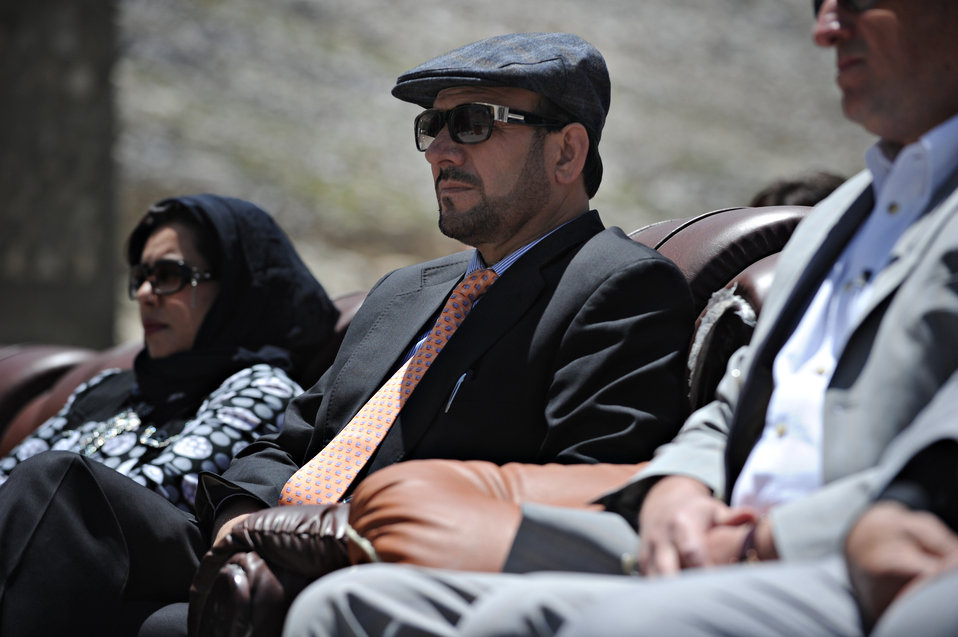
Parwan Governor Abdul Basir Salangi attends a ceremony to mark the beginning of renovations at the Salang Tunnel on the border of Parwan and Baghlan Provinces, Afghanistan, on Wednesday, June 15, 2011. (S.K.Vemmer/Department of State)